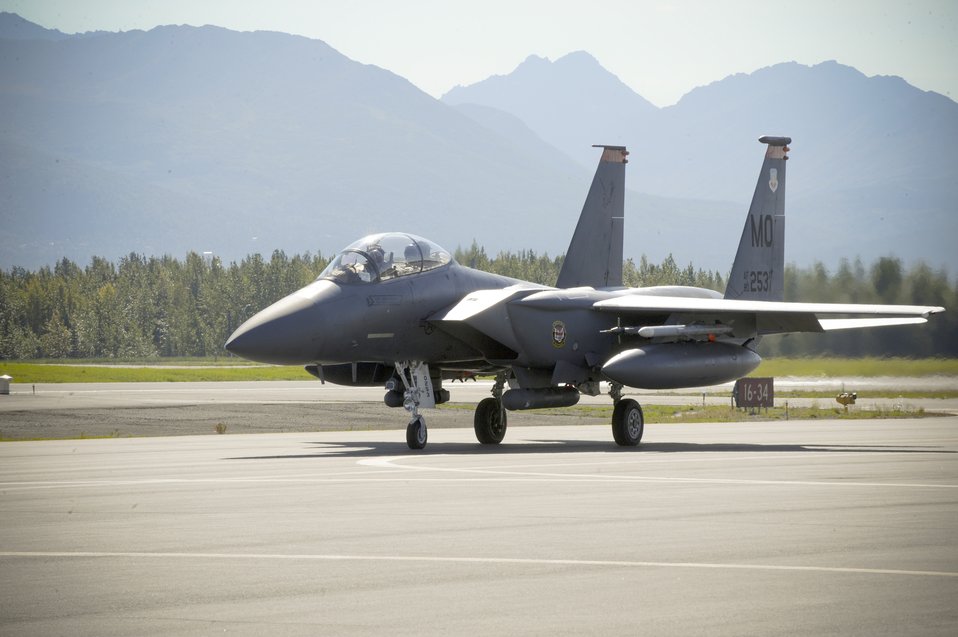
Eagles aid Predators

An F-15E Strike Eagle taxies the runway Aug. 25, 2010, at Joint Base Elmendorf-Richardson, Alaska. The 391st Fighter Squadron out of Mountain Home Air Force Base, Idaho, is currently assigned to JB Elmendorf for a temporary duty assignment to aid in training exercises for the F-22 Raptor squadrons stationed here.